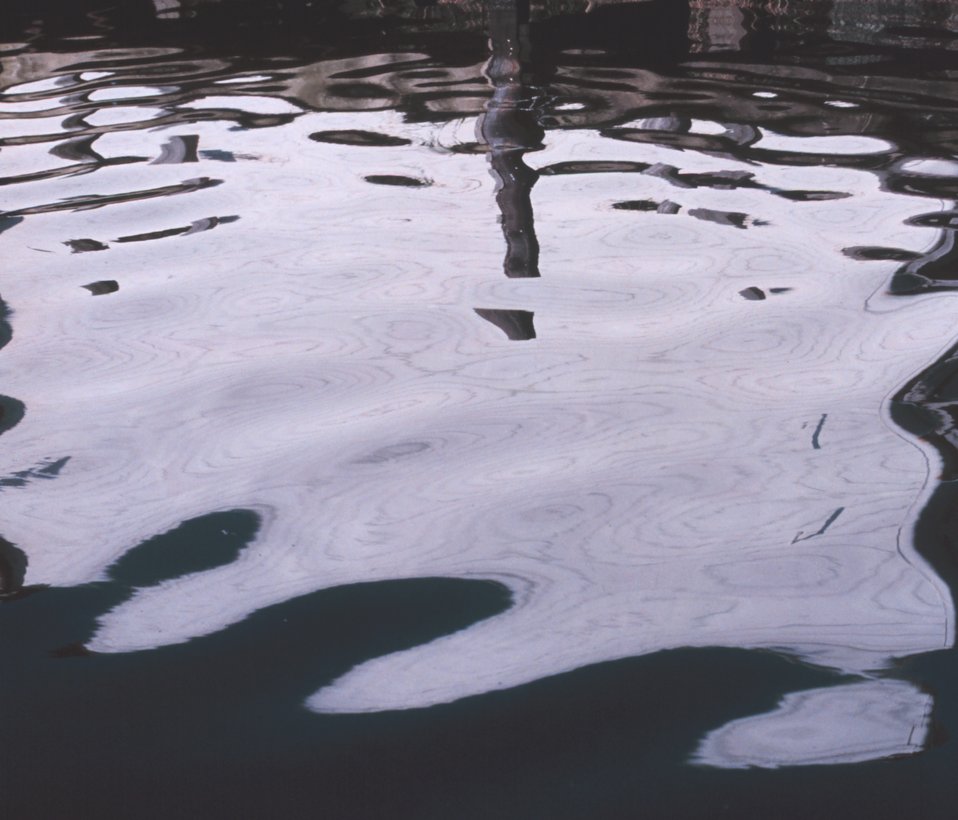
A harbor scene